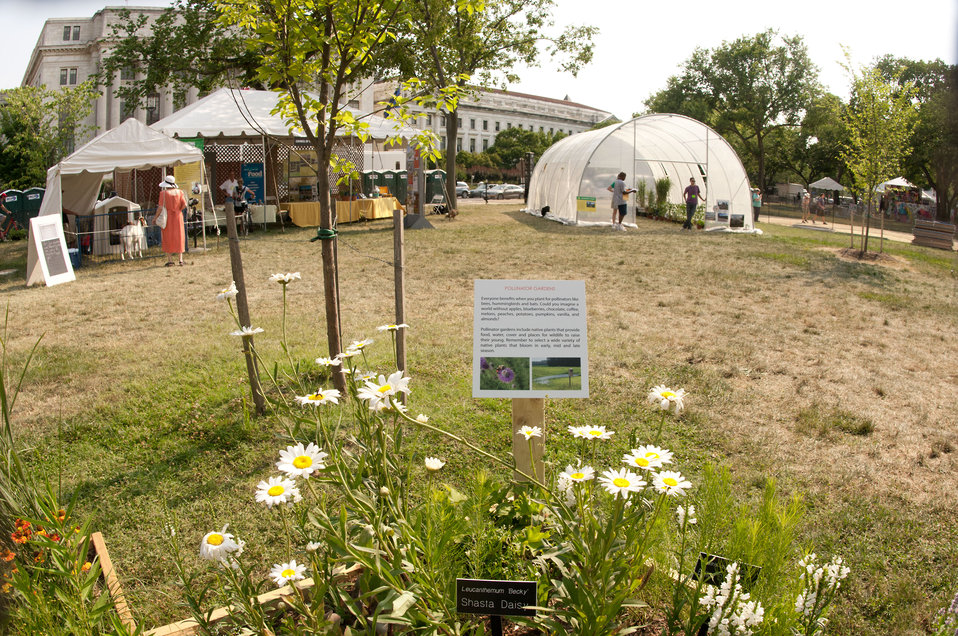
The 2012 Smithsonian Folklife Festival, on the National Mall in Washington, D.C., on Thursday, June 28, 2012. One of the three themes this year is “Campus and Community.” It celebrates the 150 years of the USDA and the Land-Grant University System. The U.S. Department of Agriculture (USDA) and the Land-Grant system extend education across the country, contributing to American agriculture success and rural prosperity. “Campus and Community” has demonstrations, discussions, hands-on activities, and entertainment to that showcase the many ways that this partnership works to improve American agriculture and rural life.